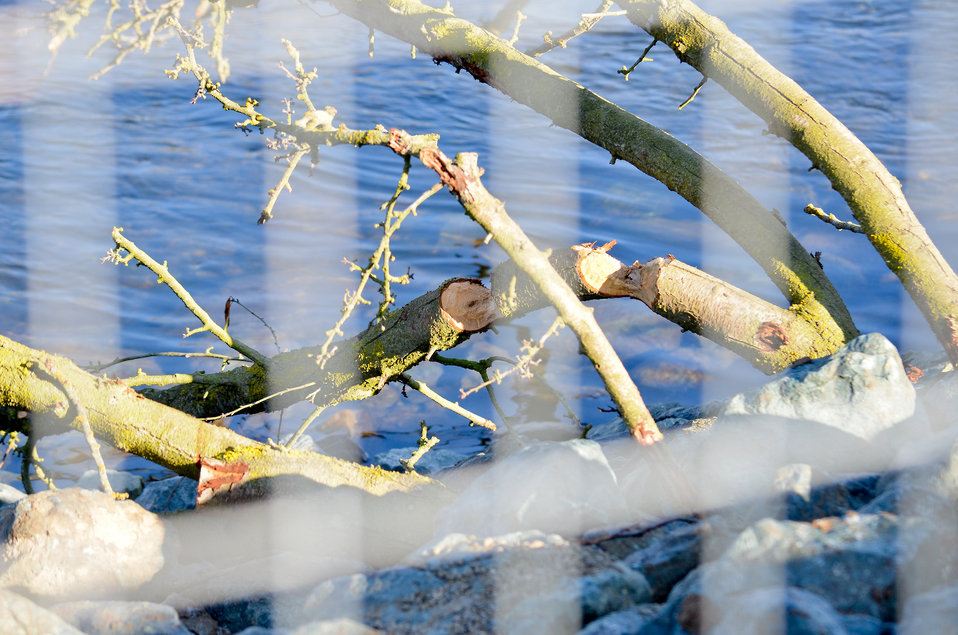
Beavers sample American River habitat

Recently uprooted almond trees intended for American River habitat, shown Jan. 4, 2012, demonstrate wear and tear from beavers between the Watt Avenue boat launch and Mayhew Drain in Sacramento, Calif. The metal fence (foreground) will serve as a barrier to protect a total of 6,785 plants at two erosion repair sites from the beavers, until the plants can sustain themselves.The plants were placed more than 15 feet away from the levee to comply with U.S. Army Corps of Engineers safety standards for vegetation on levees, improving river habitat without compromising levee stability. It’s all part of the Sacramento River Bank Protection Project, a joint effort between the U.S. Army Corps of Engineers Sacramento District and Central Valley Flood Protection Board to reduce flood risk by maintaining levees and reducing stream bank erosion along the Sacramento River and its tributaries.